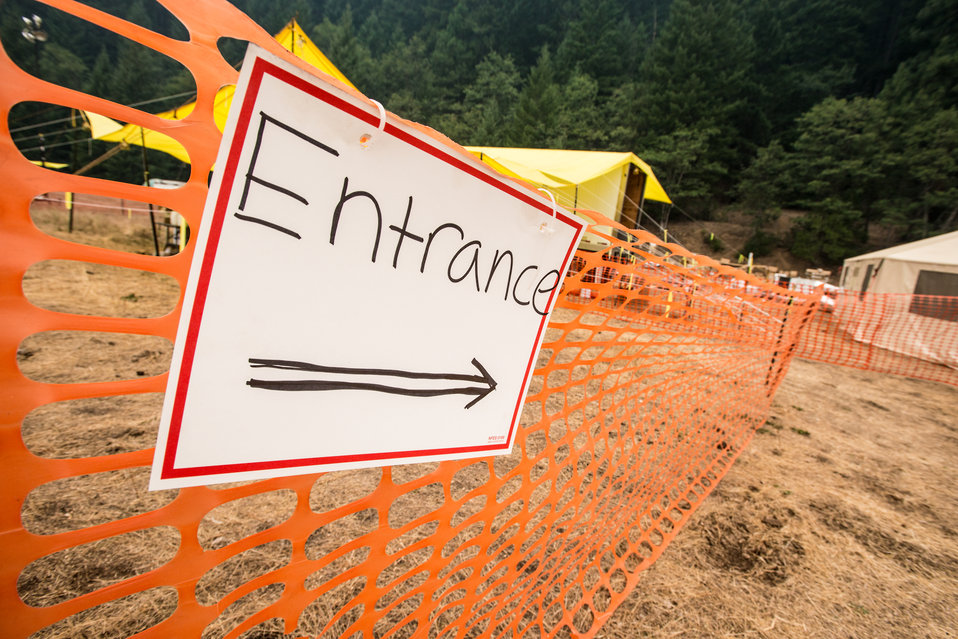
This is the beginning of all supply requests and accounting, a major factor in fighting the Salmon River Complex Fire burning northwest of Sawyers Bar and west of Etna and Yreka, CA in the Klamath National Forest, on Tuesday, Aug. 6, 2013. It is vital that when a firefighter needs fire resistant clothing, a Mccloud Tool, Pulaski Axe, Combi Tool, or pumps, connectors and hoses to draw water from a portable reservoirs to pressurize hand line (fire hoses), they go to this centralized point to get readily available item for issue or replacement as needed. These supplies have been shipped from National Interagency Supply Cache System depots and/or other caches to this and other fires across the nation.